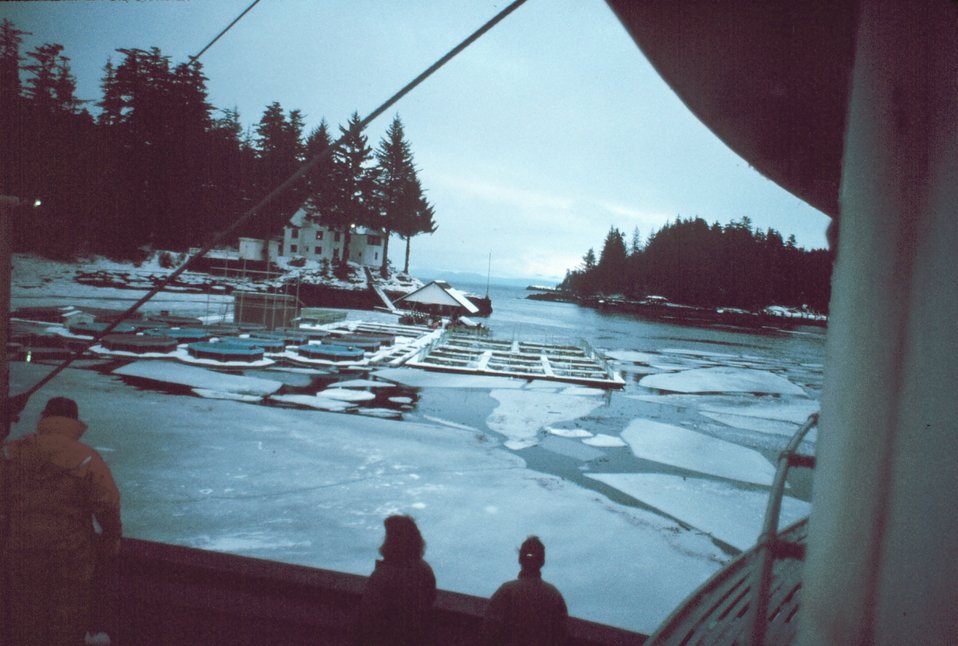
The salmon pens at Little Port Walter in the winter